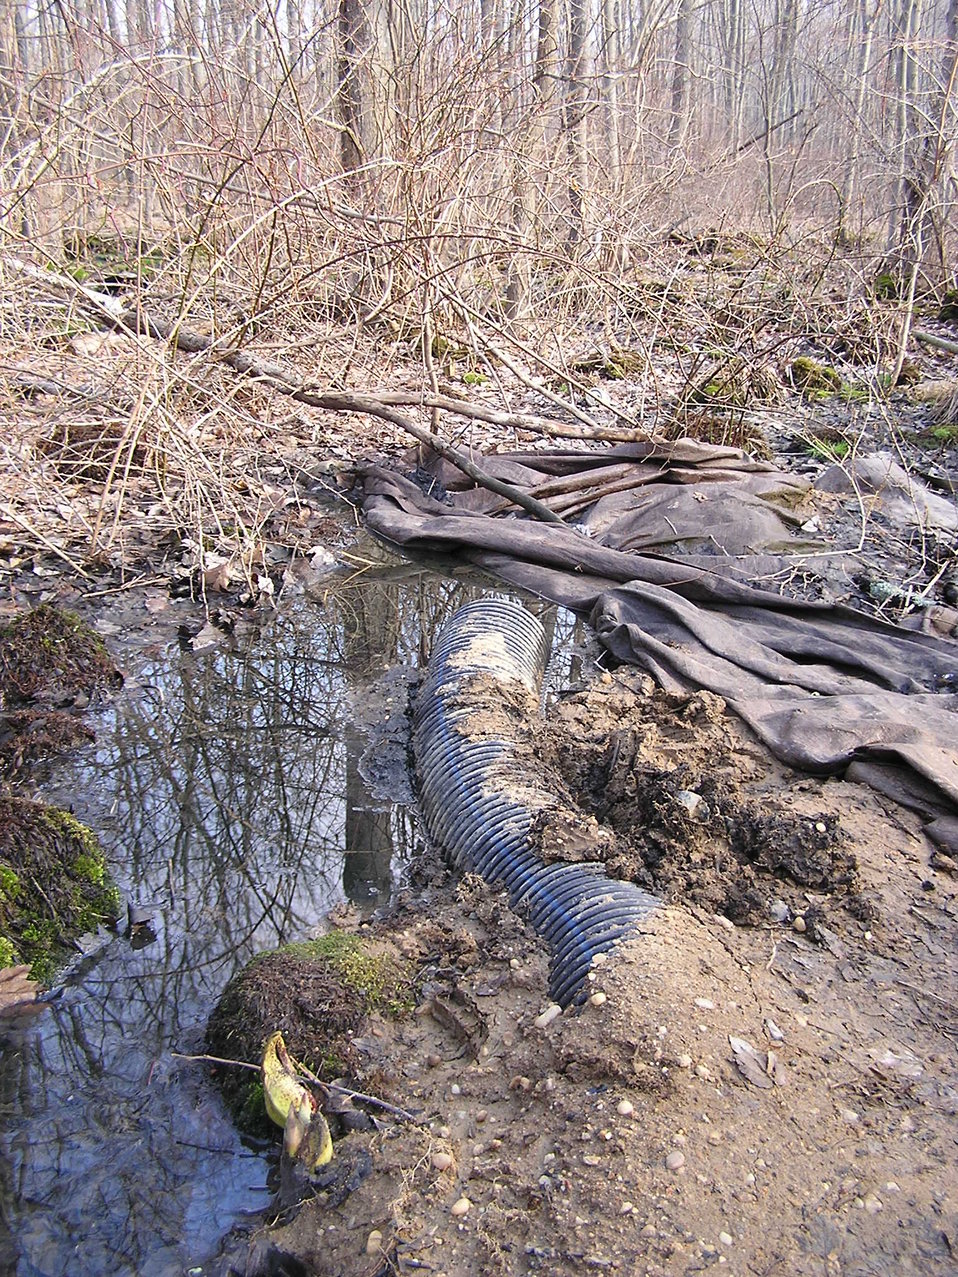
Uploaded by request of David Alderisio

Taken in the town of Lewisboro, Westchester County, New York.

I work for the New York City Department of Environmental Protection. (NYCDEP). The photo shows a black pipe that was intentionally covered by a brown tarp in an attempt to conceal a sewage discharge from a “large capacity” commercial septic system. The black pipe discharges sewage from the shopping plaza into a New York State Department of Environmental Conservation (NYSDEC) regulated wetlands, which is also a town nature preserve. A joint inspection by DEP and DEC was performed. Notice of Violations has been filed by NYCDEP. State and local agencies are in the process of filing violations as well. The commercial failing septic system is now in the process of being replaced, to remediate the illegal discharge.